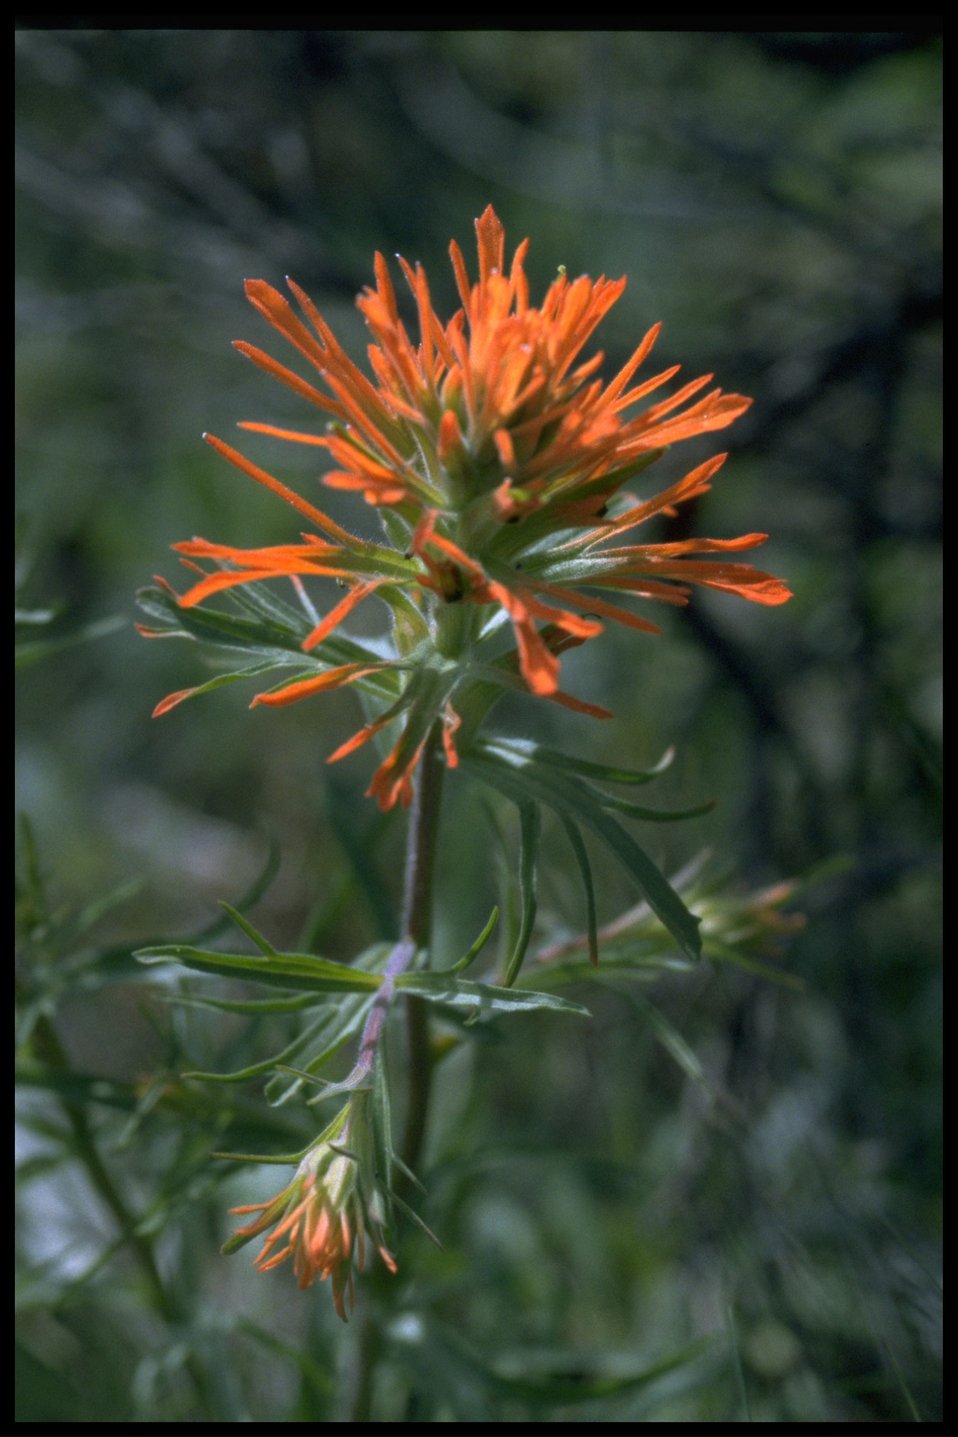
Closeup shot of Indian Paintbrush wildflower.